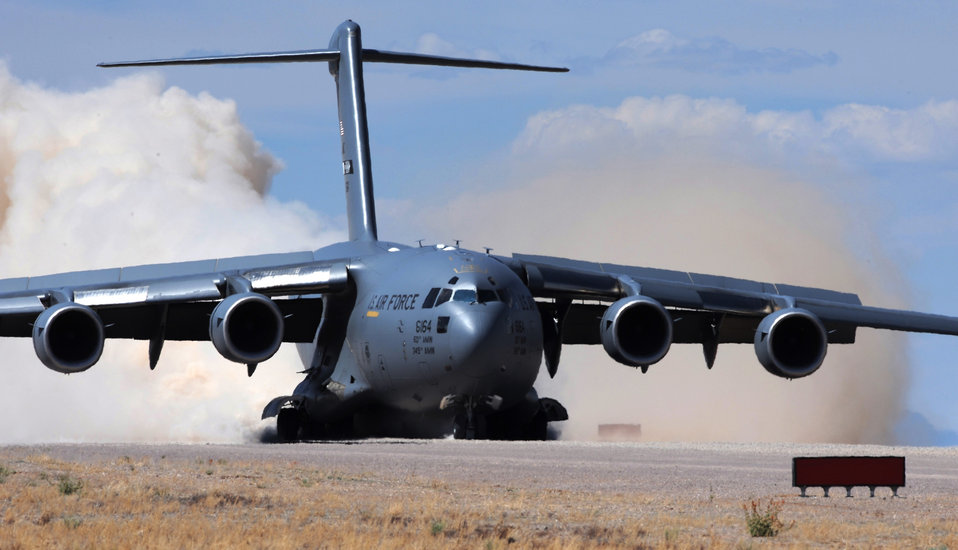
Mobility Airmen, aircraft begin moving Strykers into Afghanistan

Air Mobility Command officials plan to move 300-plus Stryker vehicles and support equipment into Afghanistan over the next two months on Air Force C-17 Globemaster IIIs (shown in picture) flown by military crews, and AN-124s, operated by commercial partners.